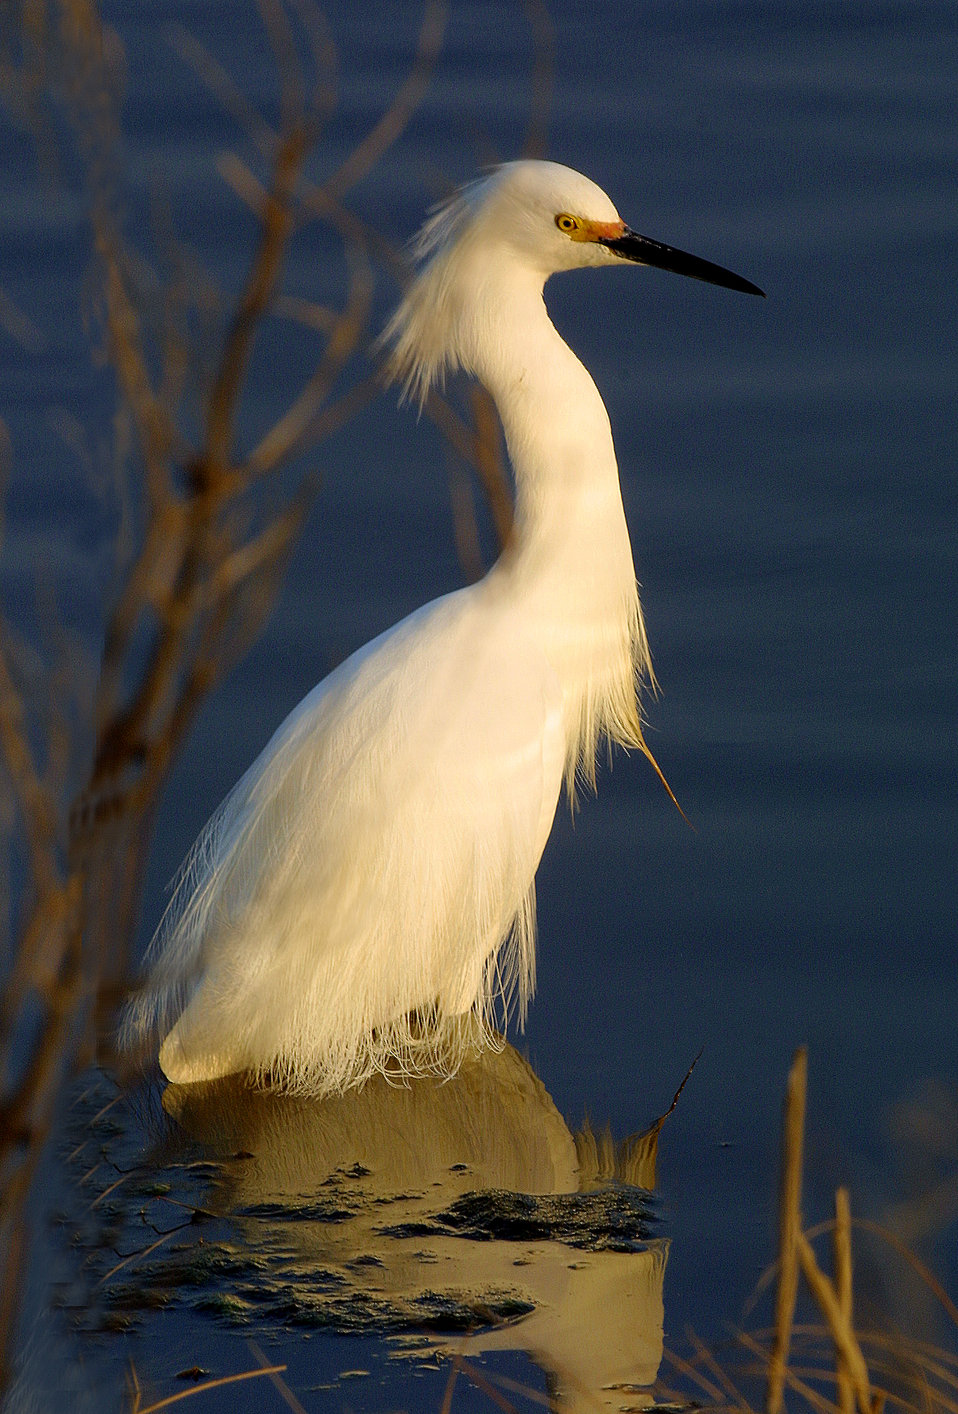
Snowy Egret

The snowy egret is just one of the species at Blackwater National Wildlife Refuge that could be affected by climate change and sea level rise.